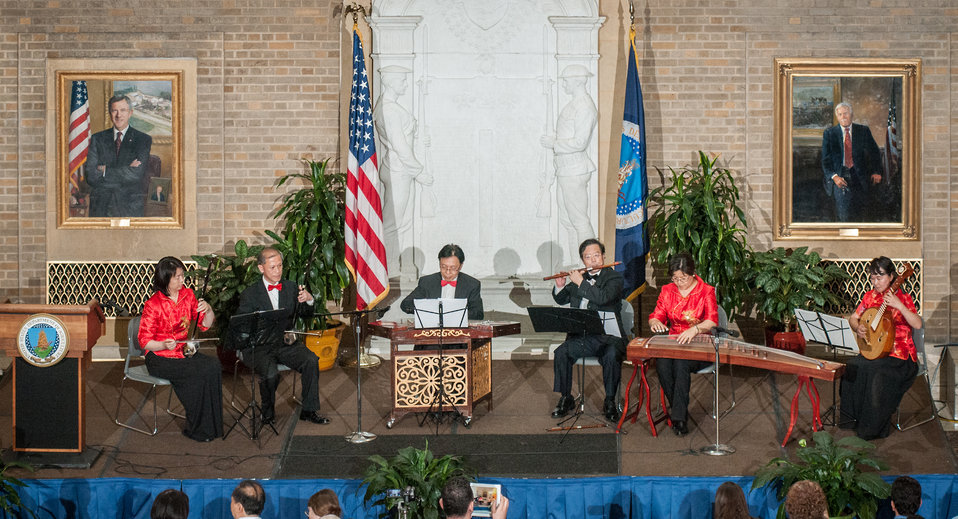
The Washington Chinese Traditional Orchestra Ensemble performs 'Melody of Purple Bamboo,' 'Jasmine Flower,' and 'Joys of Beaming,' during the U.S. Department of Agriculture (USDA) Asian Pacific American Heritage Month Observance, at the USDA headquarters, Whitten Building patio, in Washington, D.C., on Thursday, May 23, 2013. This year’s theme is “Building leadership; Embracing the Cultural Values and Inclusions.”